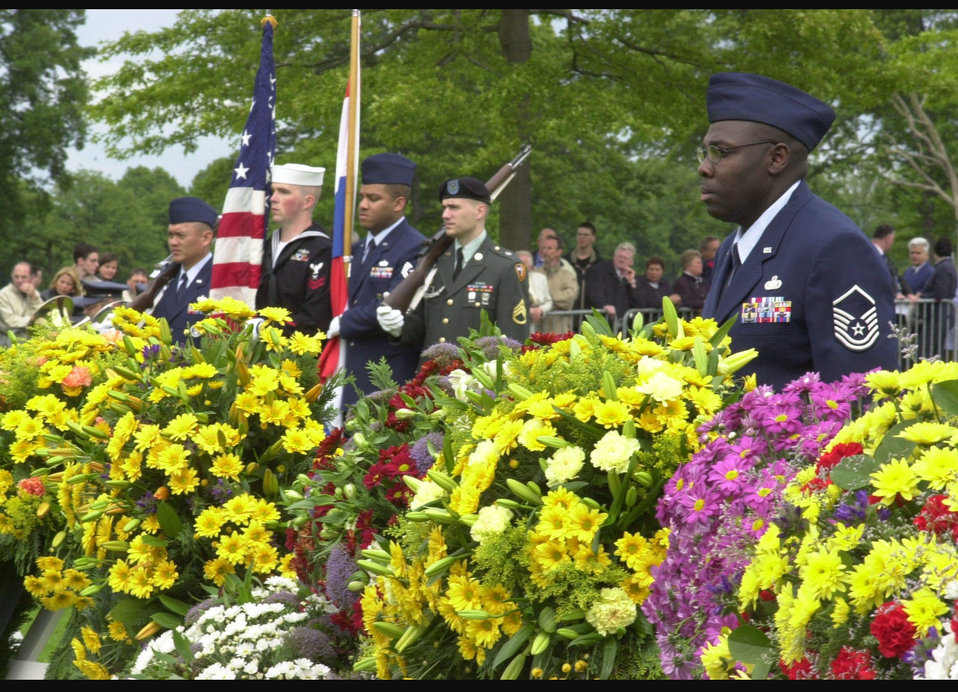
Memorial

MARGRATEN, Netherlands -- Air Force Master Sgt. Michael Coonce (right) stands ready to direct wreath bearers during the Memorial Day ceremony at the Netherlands American Cemetery here. The cemetery is the final resting place for more than 8,300 Americans who died during World War II. Coonce was the noncommissioned offer in charge of ceremonies and is assigned to the Regional Headquarters Allied Forces North Europe Air Force Element.